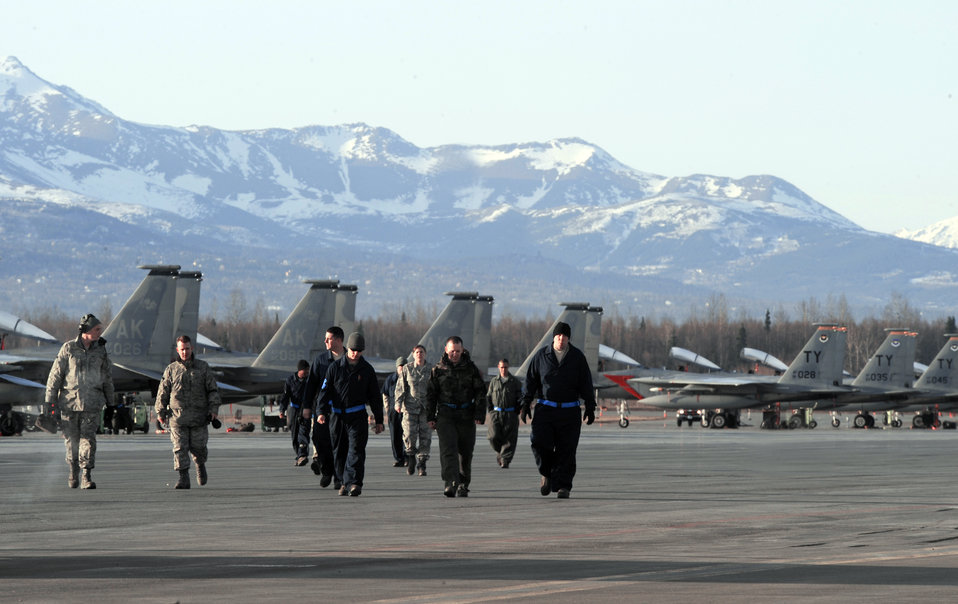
Maintainers keep Red Flag-Alaska jets flying

Airmen from the 19th Aircraft Maintenance Unit and the 2nd Aircraft Maintenance Unit at Tyndall Air Force Base, Fla., head to a hangar after preparing F-15 Eagles for takeoff during Red Flag-Alaska April 28 at Elmendorf AFB, Alaska. The exercise enables flying squadrons to enhance their warfighting capabilities by flying simulated combat sorties in a realistic threat environment.